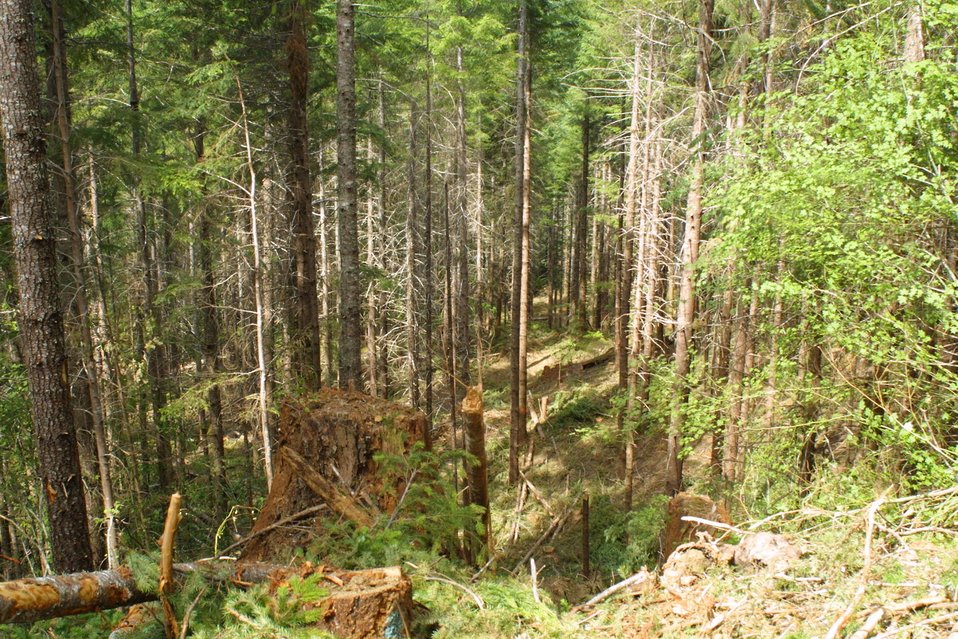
Camas East Timber Sale in Late Successional Reserve.